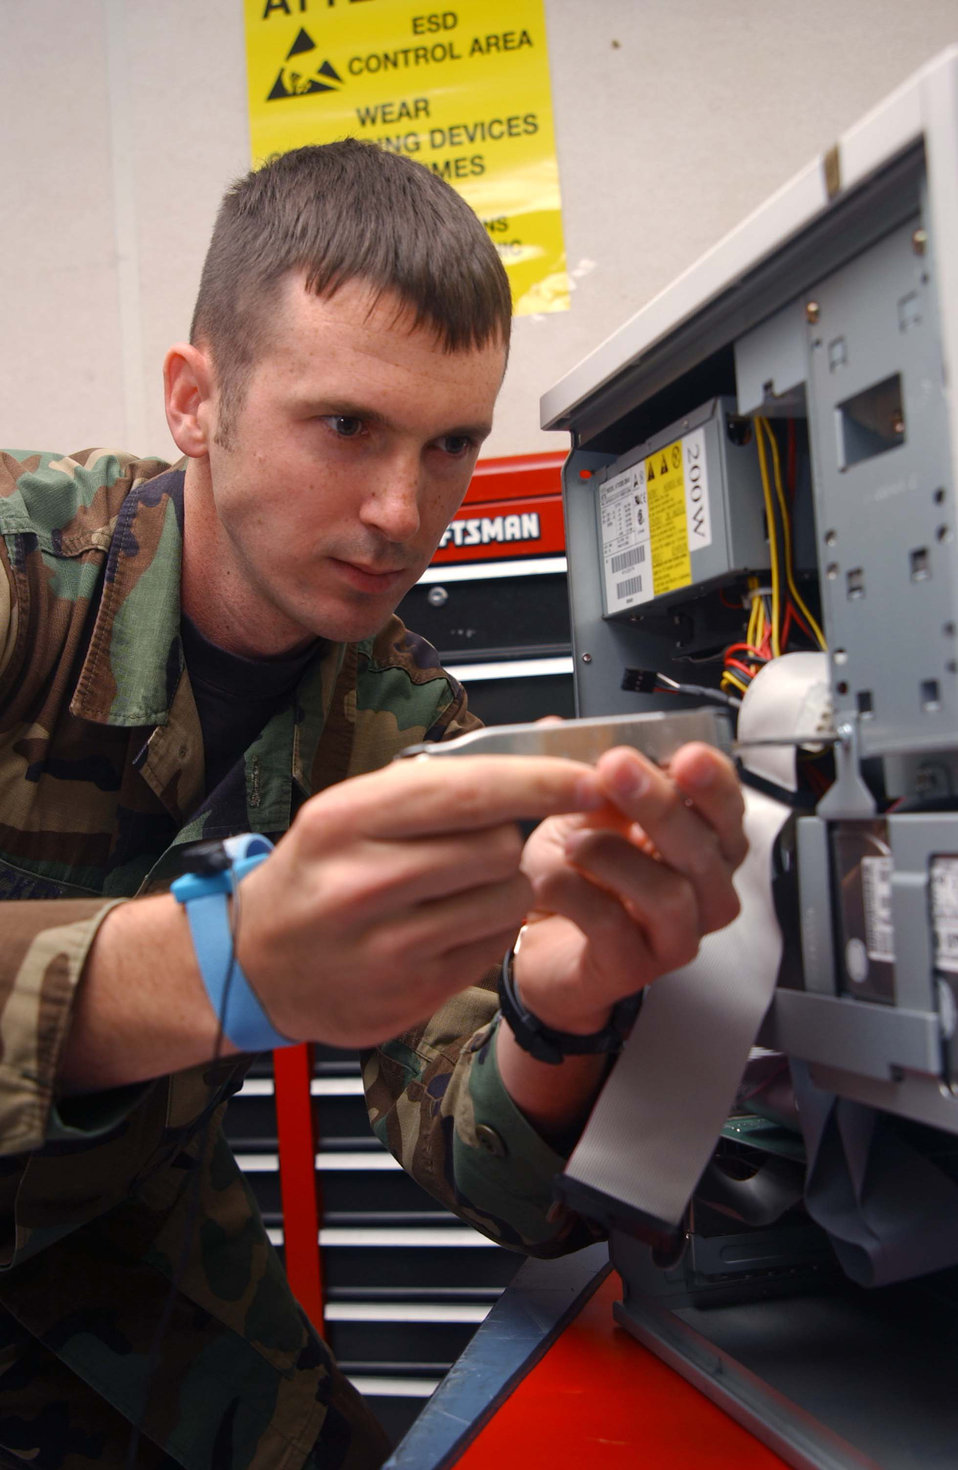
New drive

WHITEMAN AIR FORCE BASE, Mo. -- Staff Sgt Michael Tucker, a network administrator installs a compact disk drive while performing routine maintenance on a computer at the network control center here May 5. Network administrators maintain the base network and perform routine computer maintenance as a part of their daily operations. Staff Sergeant Tucker is with the 509th Communications Squadron.